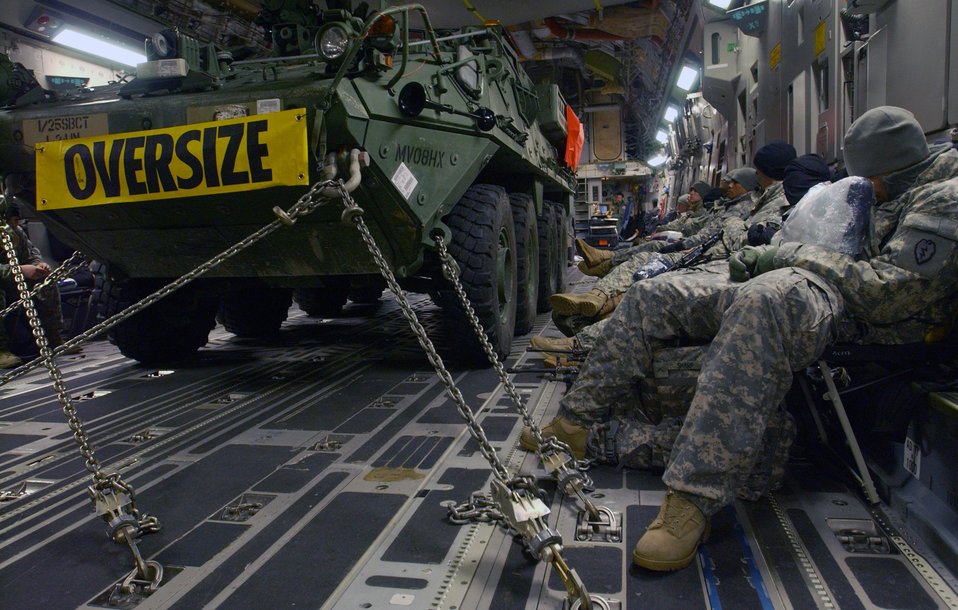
Air Force, Army forces join to support exercise

Soldiers from the Army's First Stryker Brigade at Fort Wainwright, Alaska, await takeoff alongside their Stryker vehicle after boarding a C-17 Globemaster III at Eielson Air Force Base, Alaska, that will transport them and their equipment to South Korea in support of a Foal Eagle exercise. The C-17 and its crew are from the 517th Airlift Squadron at Elmendorf AFB, Alaska.